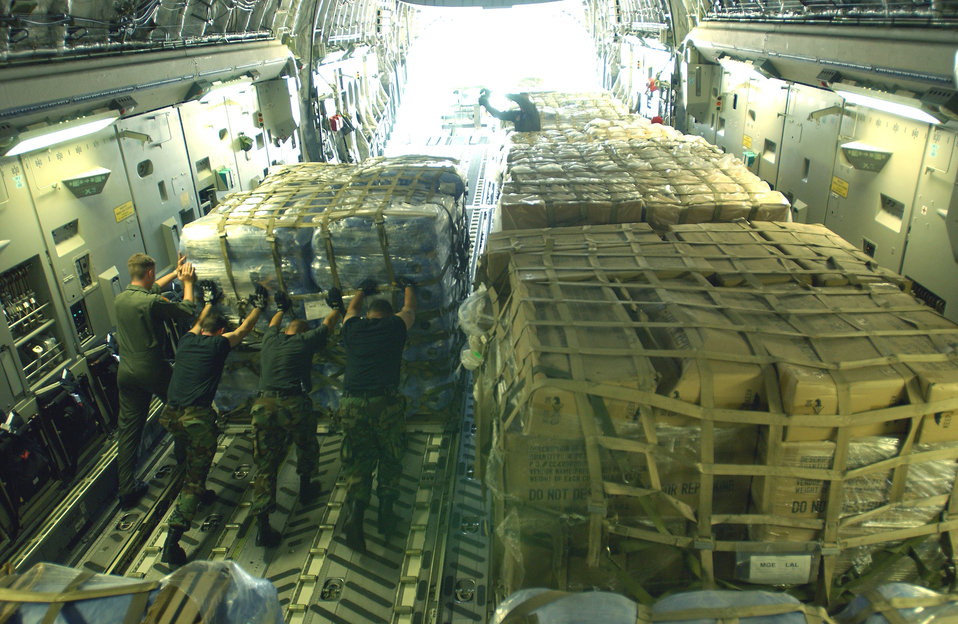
Hurricane Charley relief

LAKELAND, Fla. -- Airmen of the Tanker Airlift Control Element from McGuire Air Force Base, N.J., unload pallets of relief supplies that arrived here Aug. 15. Lakeland Regional Airfield has become the center of relief operations in Florida for the Federal Emergency Management Agency. The U.S. Air Force is providing support by airlifting equipment, people and supplies, expediting the delivery of the items.